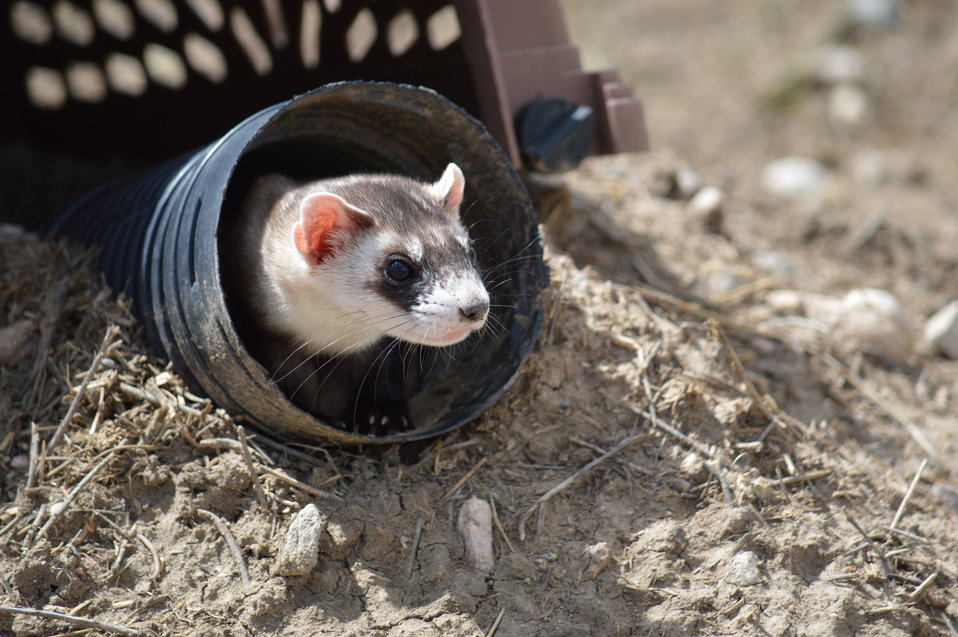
Interns visit the NBFFCC

In the summer of 2012, USFWS Region 6 interns visited the National Black-footed Ferret Conservation Center (NBFFCC) in Colorado to learn how the program reintroduces the endangered Black-footed ferret back into its native habitat.